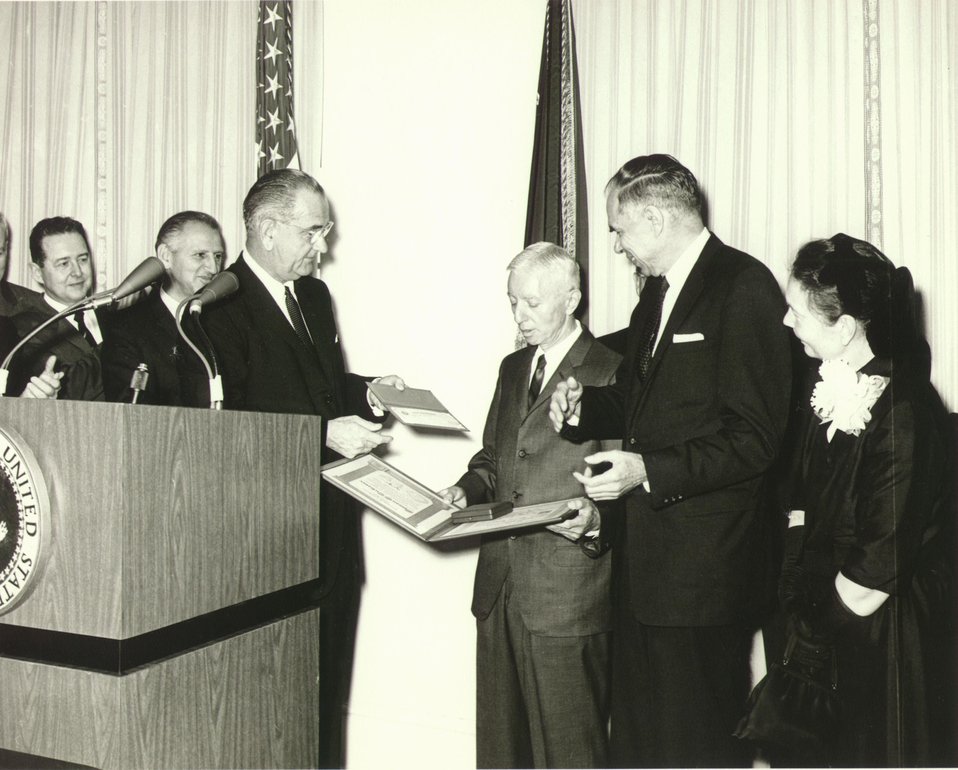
Fermi Award. Recipient: Rickover. Date: 1964.